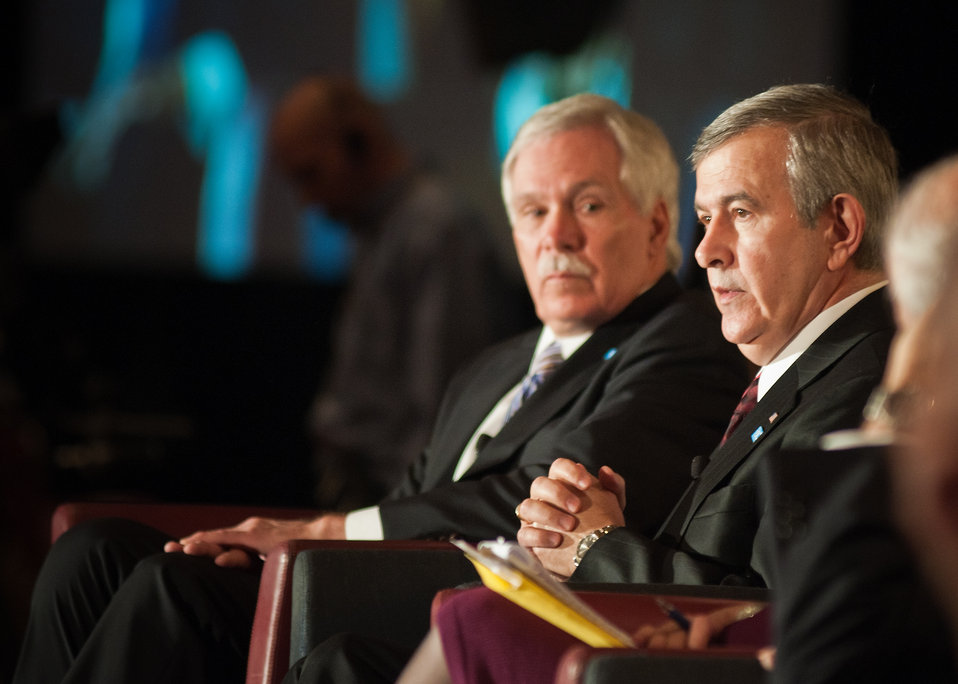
At the 2012 Agricultural Outlook Forum, “Moving Agriculture Forward” in Arlington, VA, held on Thursday, February 23, 2012, 7 former Secretaries of Agriculture sat on the plenary panel “Visions of the Future” hosted by current Agriculture Secretary Tom Vilsack. Senator Johanns (NE) (right) speaks out during the panel discussions as Governor Schafer (ND) (left) listens.